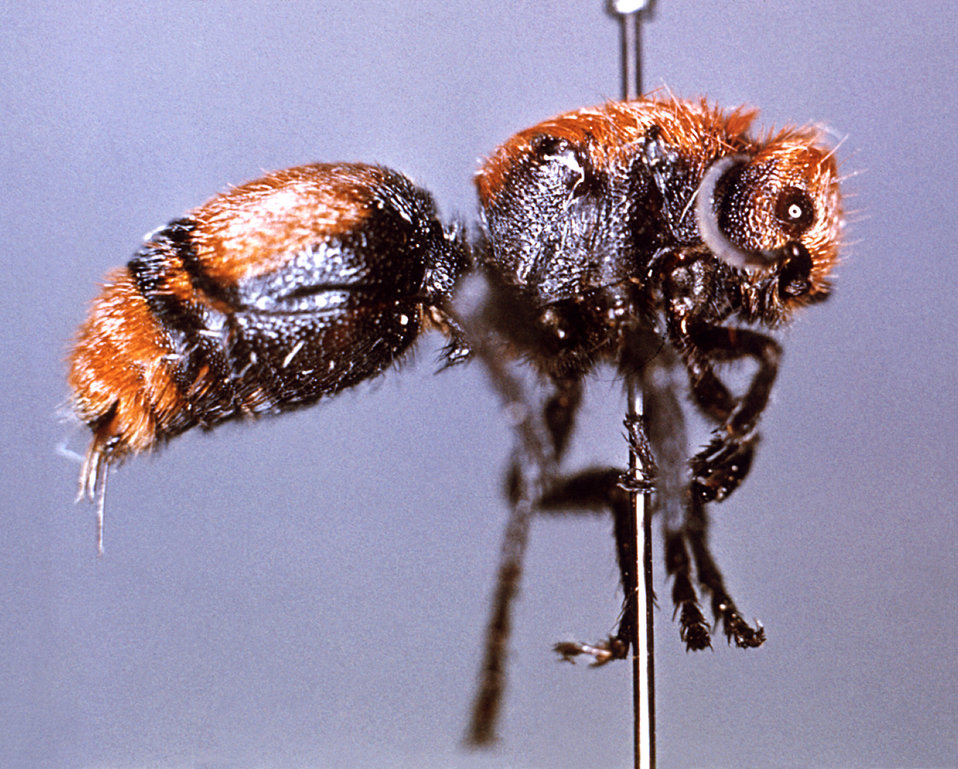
This is a right ventral oblique view of a 'velvet ant', Dasymutilla occidentalis, which is actually a flightless wasp.